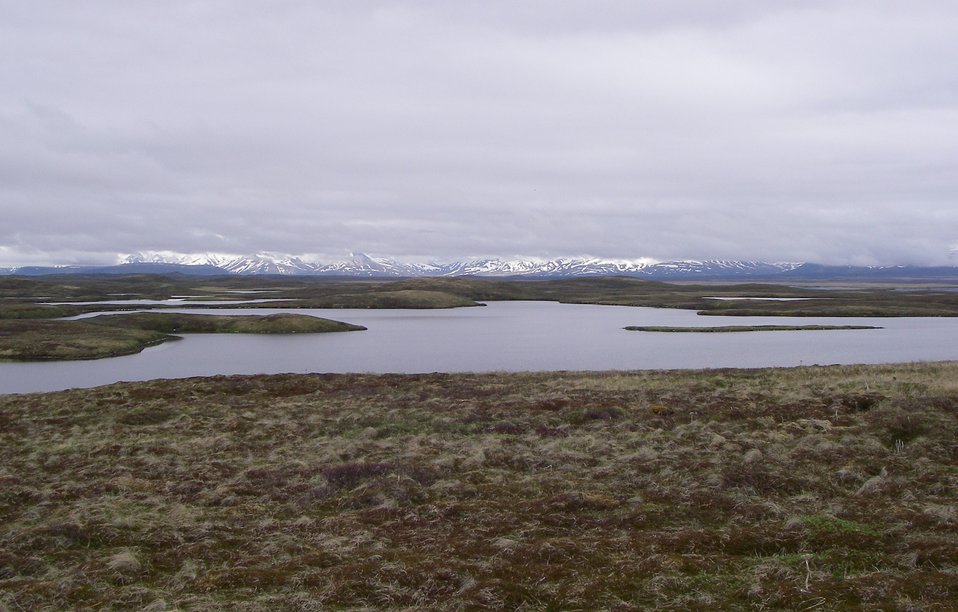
Izembek Wilderness

Wilderness north of Kinzarof Lagoon, Izembek National Wildlife Refuge
Photo by Kristine Sowl,
USFWS, Public Domain